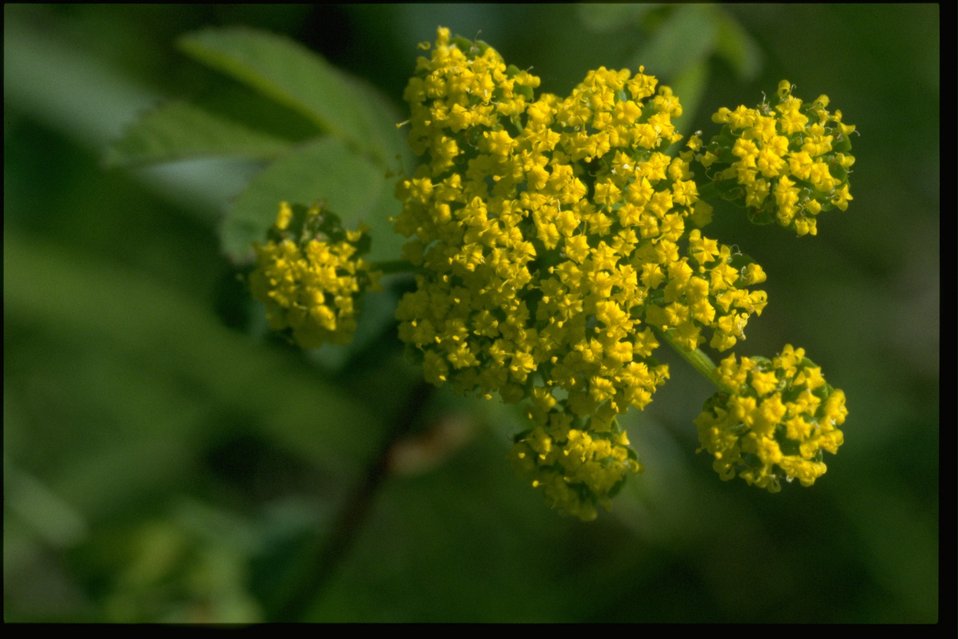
Closeup shot of Lomatium utriculatum.